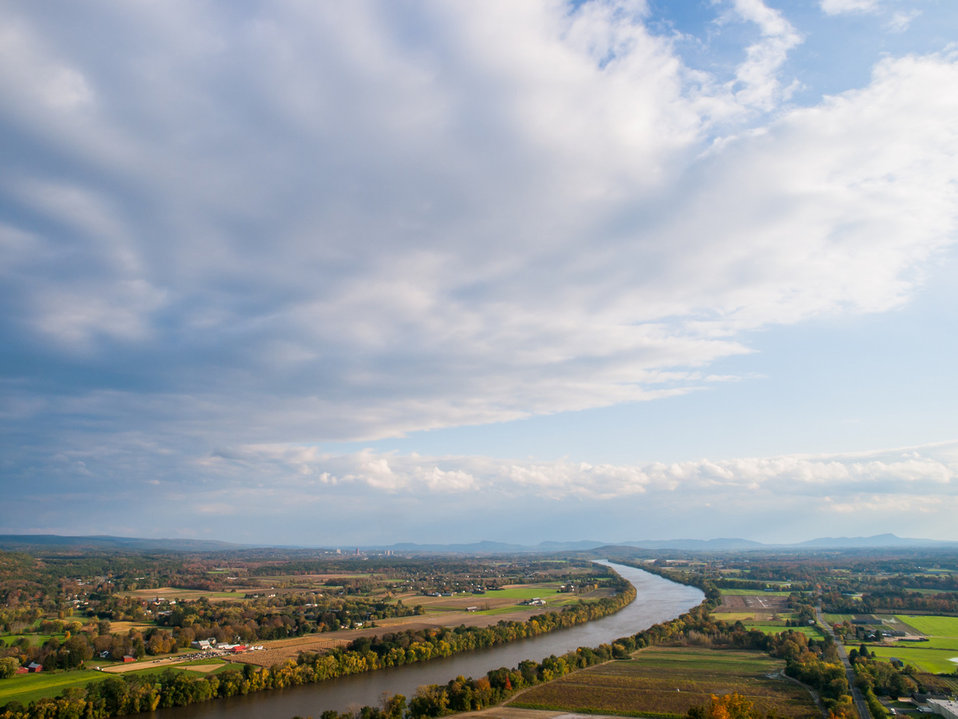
Connecticut River Valley

Photographed from Mount Sugarloaf State Reservation, MA.